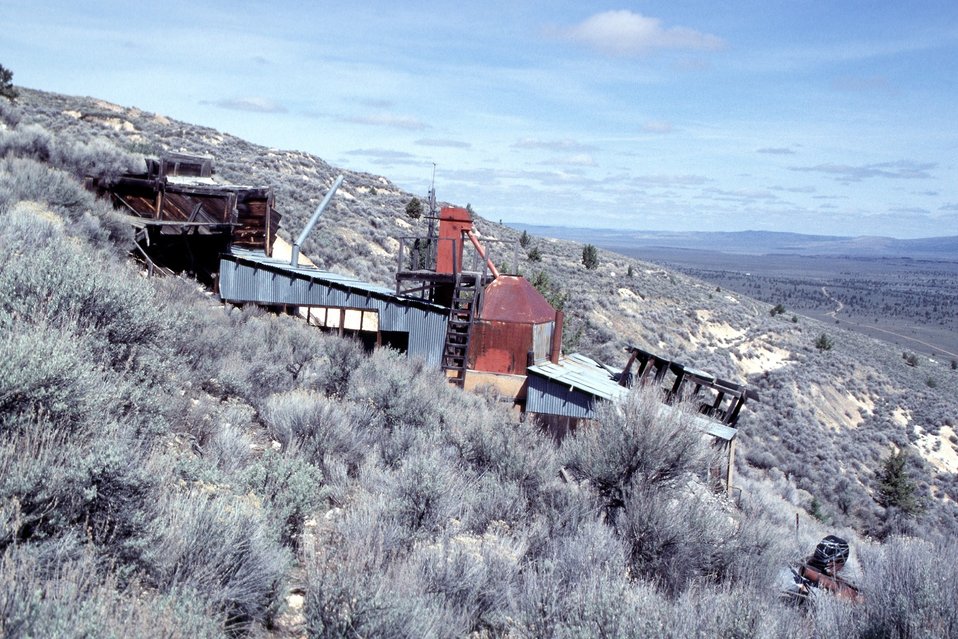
AML Glass Buttes, G4, Burns District This mill/retort produced 87 flasks of mercury in 1957. Ore was dropped into a hopper on the left side of the photo. It was then crushed in the low metal building. It was heated in a retort in the red building. The tin-roofed room in the right part of the photo held tools.